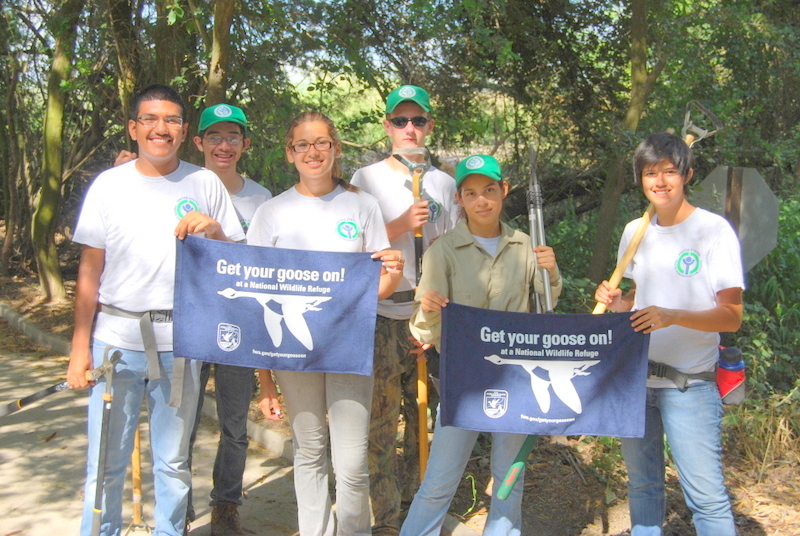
Get Your Goose On!

Photo taken at Santa Ana National Wildlife Refuge in southern Texas.